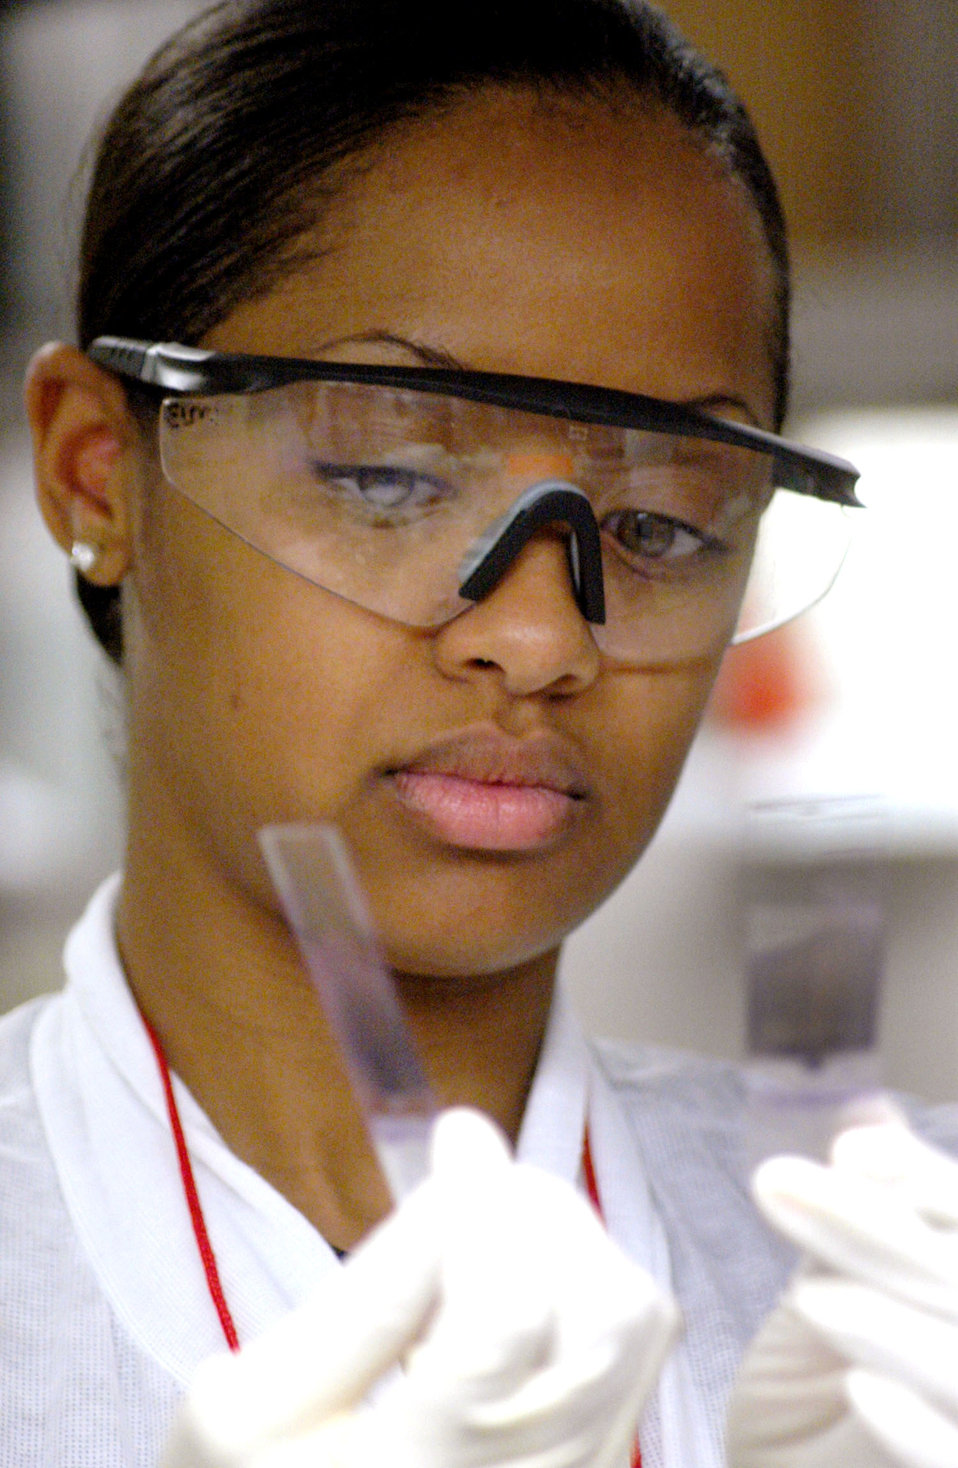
Analyze this

ROBINS AIR FORCE BASE, Ga. -- Senior Airman Nicole Camp prepares to view slides through a microscope. She is a laboratory technician with the 78th Medical Group here. Lab techs support the group's various departments, analyzing hundreds of fluid and tissue samples each day to help physicians diagnose patient ailments.